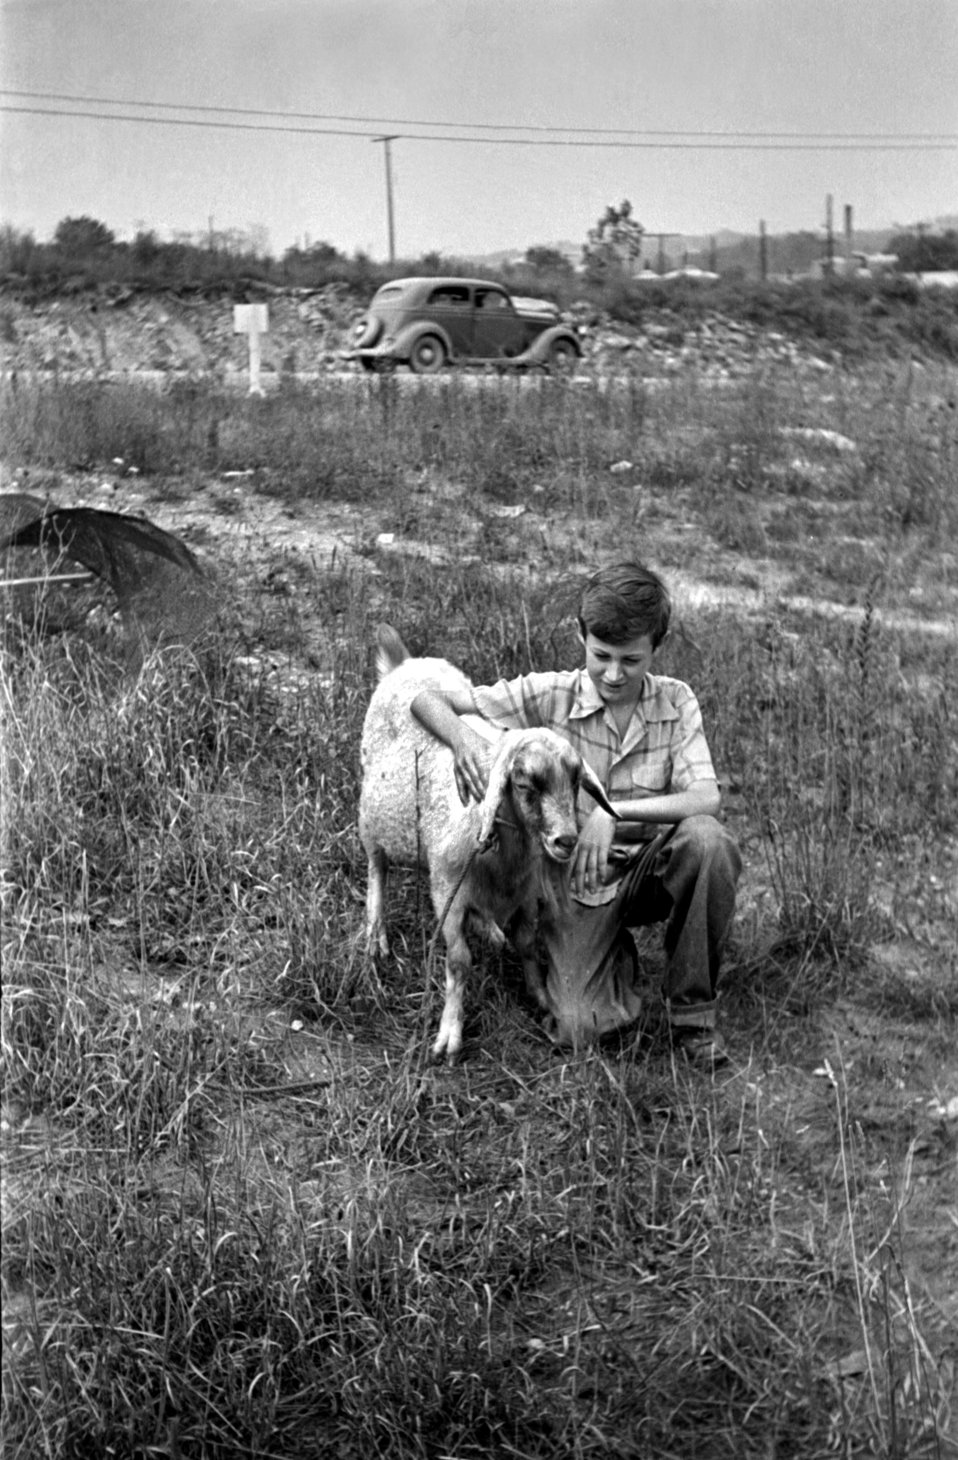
Boy With Goat Oak Ridge 1940s

1469-3 DOE photo Ed Westcott 1940s Oak Ridge Tennessee